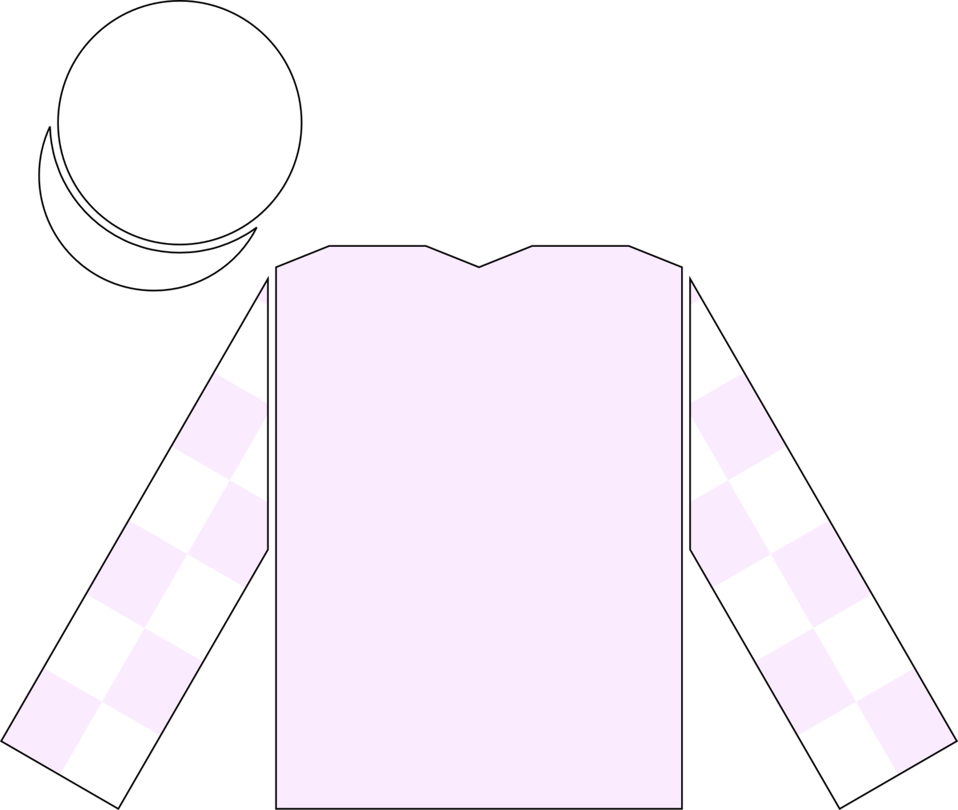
The en:racing silks of Anthony Pakenham, as worn by the jockey of en:Sir Percy to victory in the en:2006 Epsom Derby.